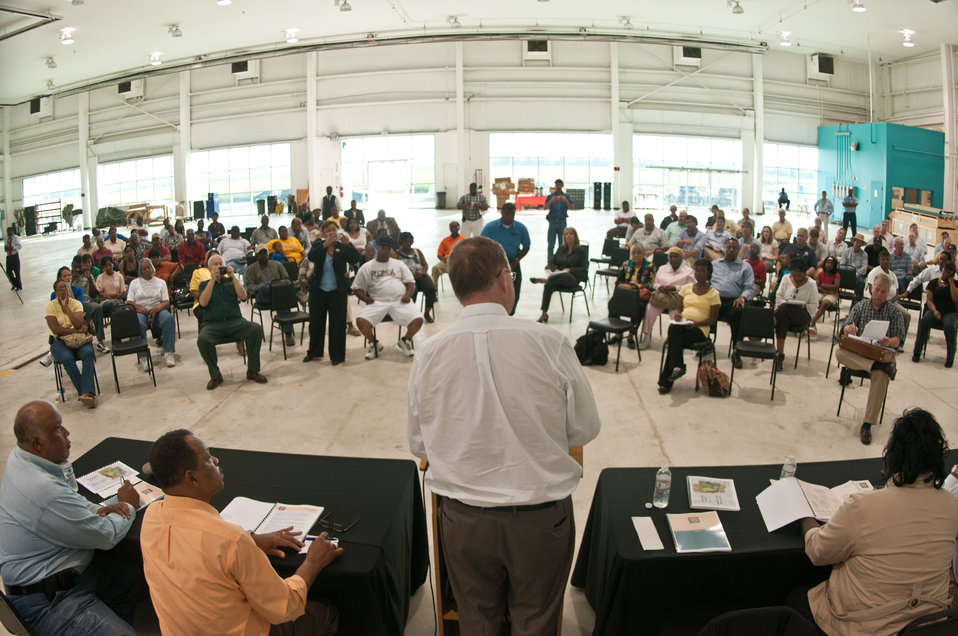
U.S. Department of Agriculture Undersecretary for Rural Development Dallas Tonsager addresses farmers an outreach event at Tunica Airport in Mississippi on Thursday, May 19, 2011. With him is Mississippi Congressman Bennie Thompson (left); Acting Under Secretary Farm and Foreign Agriculture Service Michael Scuse (right of photo); Rural Development State Director for Mississippi Trina N. George (right), and other government officials were available to answer questions and assist people in getting help.